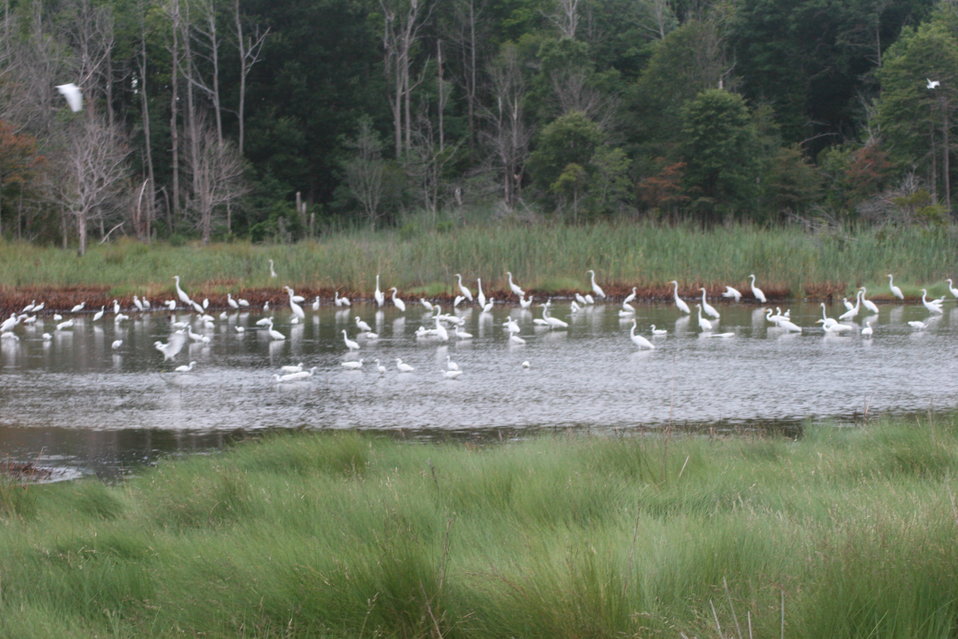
Flock of Egrets in the Marsh